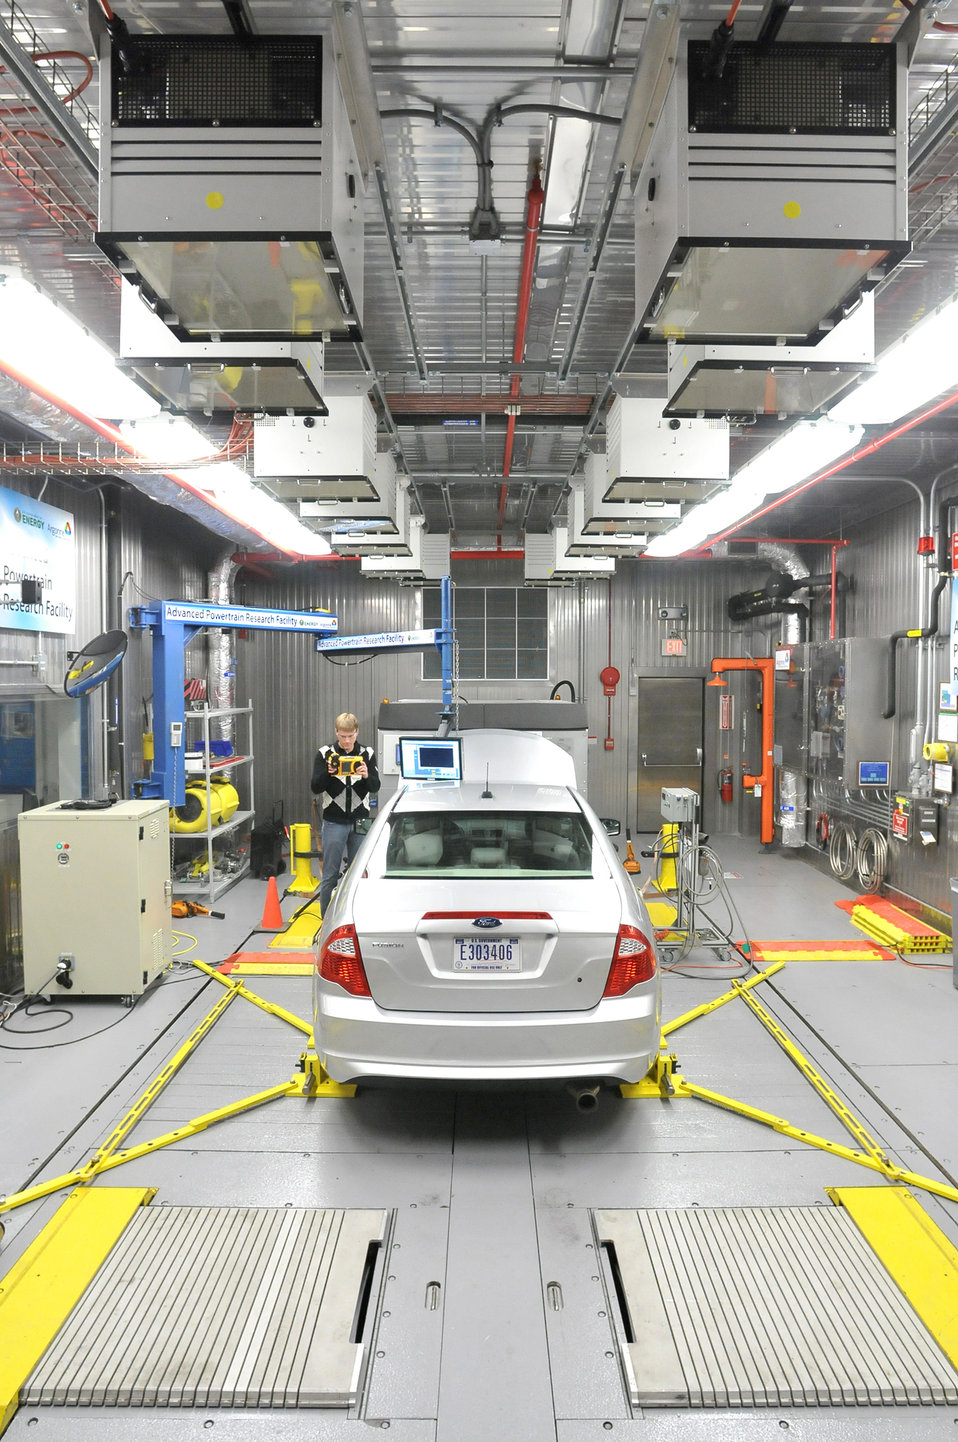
ARGONNE NATIONAL LABORATORY ENGINEER PREPARES A VEHICLE FOR DYNAMOMETER TESTING IN THE ADVANCED POWERTRAIN RESEARCH FACILITY'S ENVIRONMENTAL TEST CELL.

This Facility is equipped to evaluate vehicles and components under extreme hot and cold temperature conditions.